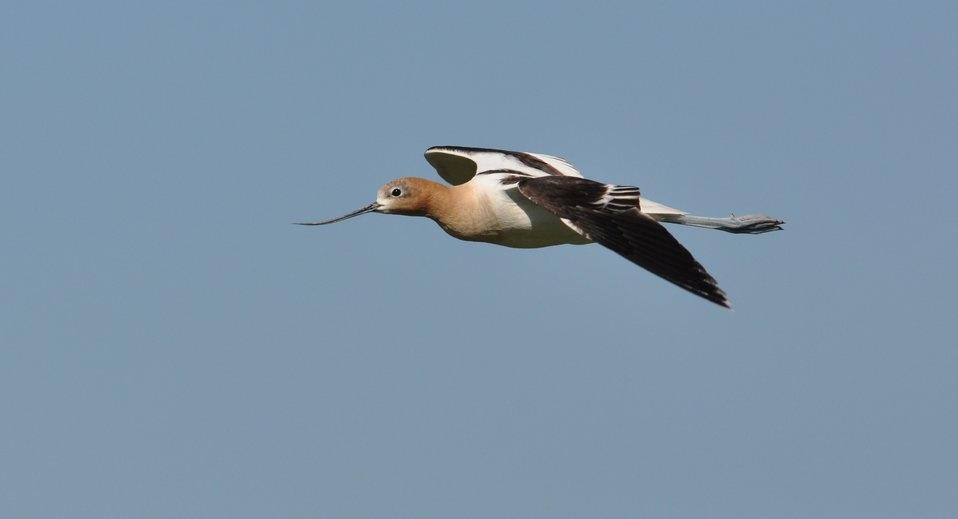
American avocet

Lostwood National Wildlife Refuge, ND.